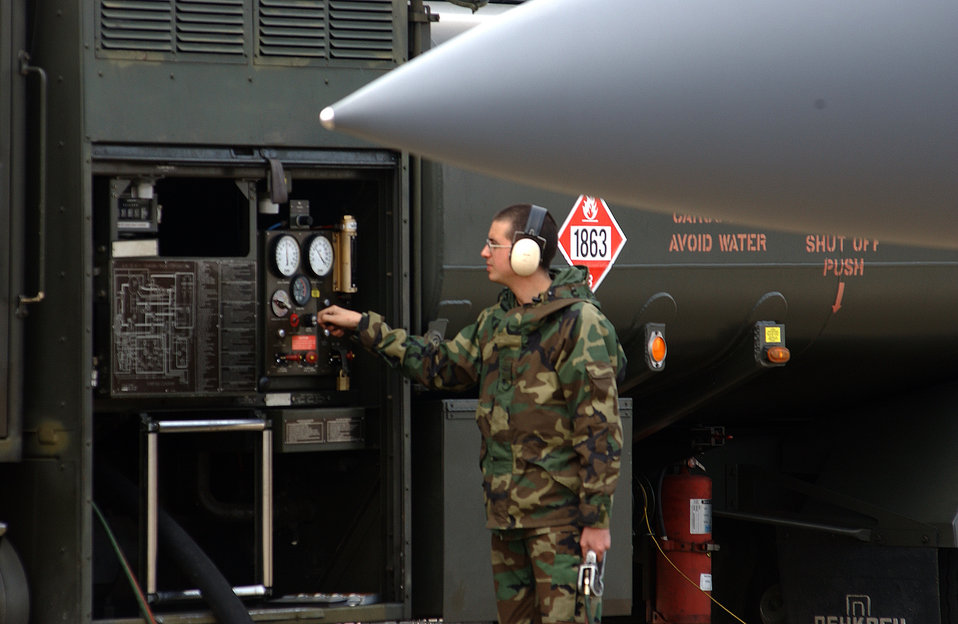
Gas up

ROYAL AIR FORCE LAKENHEATH, England -- Airman 1st Class Randall Cassell prepares to refuel an F-15 Eagle with JP-8 fuel here April 1. Airman Cassell is a refueling operator with the 48th Logistics Readiness Squadron. The 48th LRS manages and operates a fleet of more than 750 vehicles valued at $41 million. It aslo receives, stores, inspects and delivers supplies worth $700 miliion and annually issues 40 million gallons of petroleum via 29 R-11 refuelers.